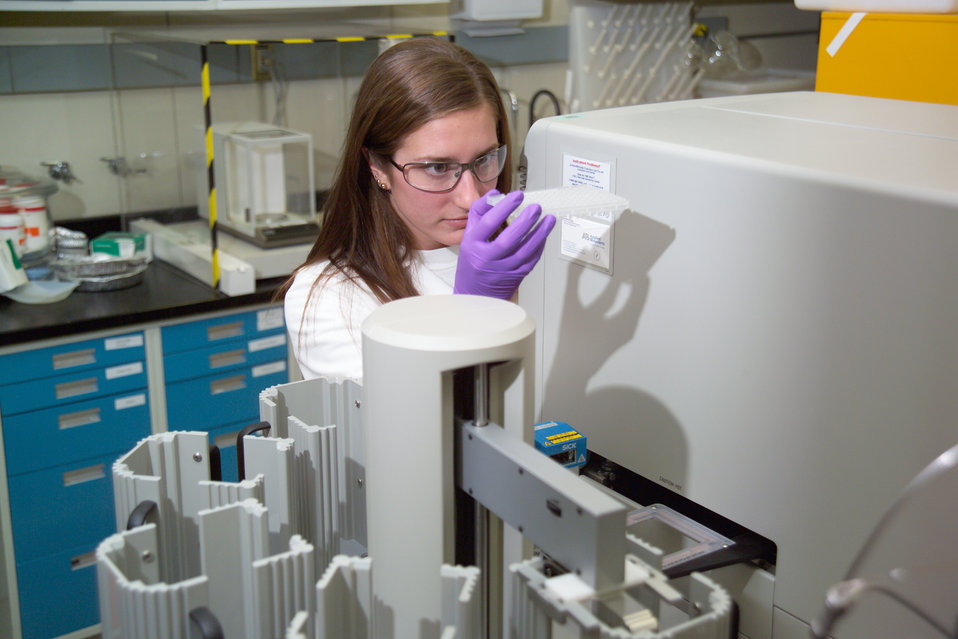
BIOTECHNOLOGY RESEARCH PROGRAMS AT IDAHO NATIONAL LABORATORY.